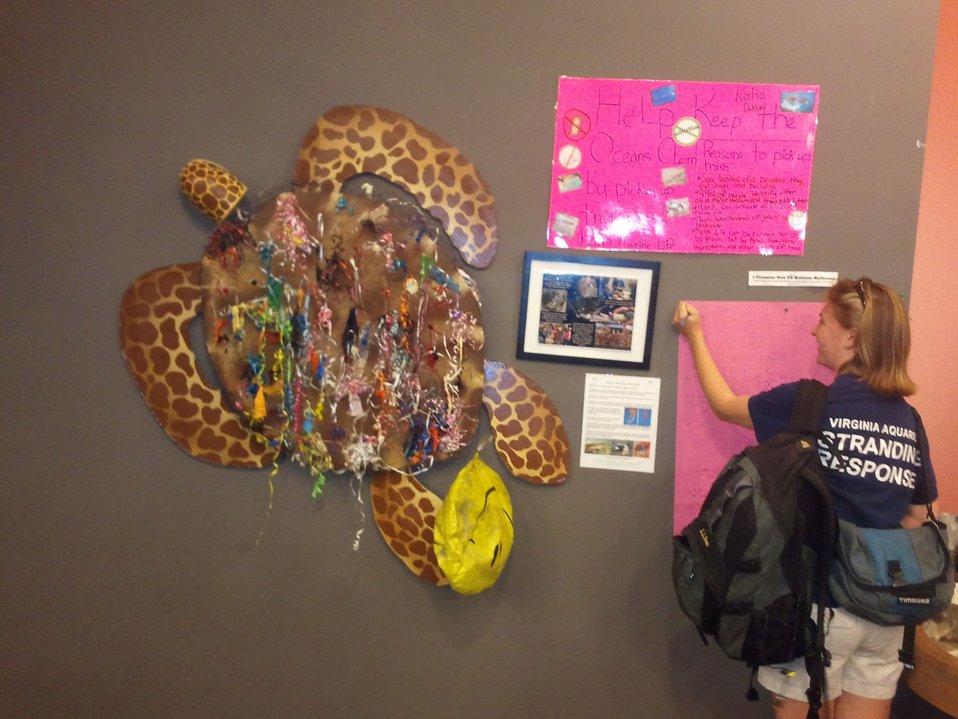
Trash talking turtle

On display at Eastern Shore of Virginia National Wildlife Refuge.